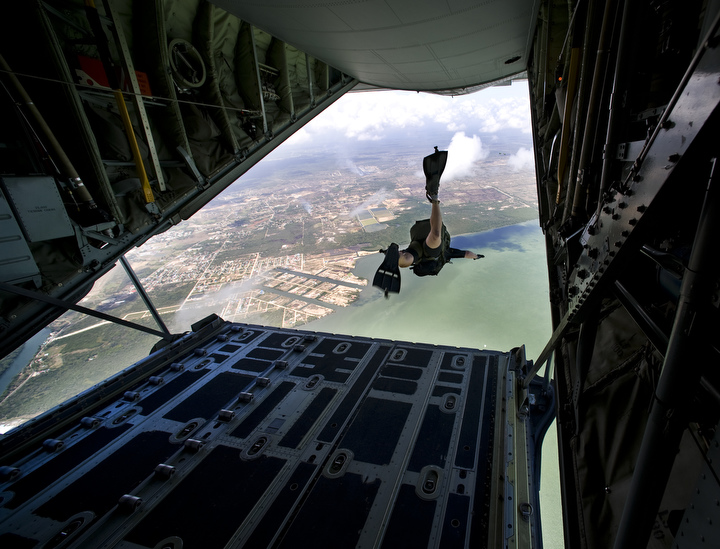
Operation Southern Partner

Pararescueman Staff Sgt. Blair Bearny jumps from the back of a C-130J Hercules June 9 to demonstrate a rigged alternate method zodiac, or RAMZ, capability jump into the Caribbean Ocean for members of the Belize National Coast Guard and local media during Operation Southern Partner.